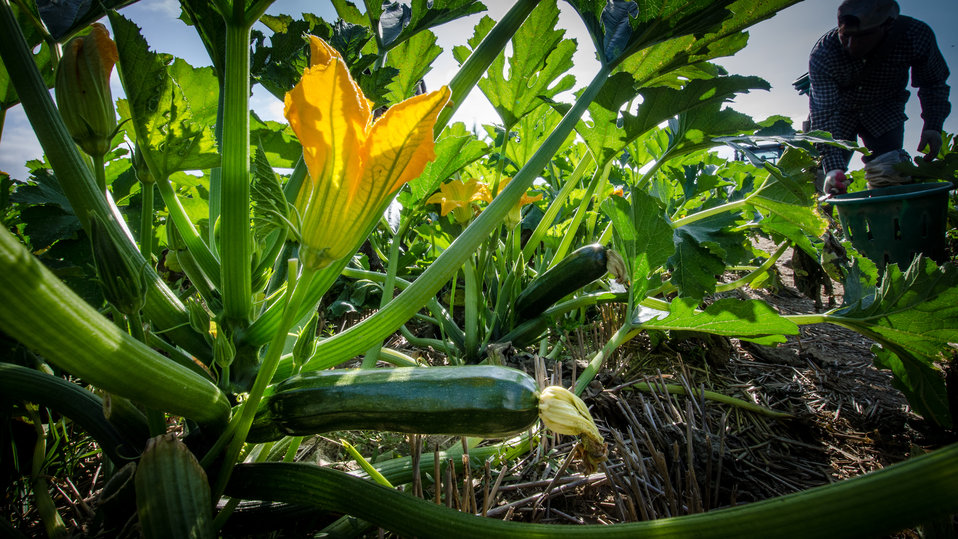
Migrant workers harvest green zucchini squash from rows of plants at Kirby Farms in Mechanicsville, VA on Friday, Sep. 20, 2013. The squash is then transferred to the processing crew for washing and packaging for shipment to wholesalers. Kirby Farms a third-generation family farm that covers 500 acres and generates produce and grains on a year-around operation.